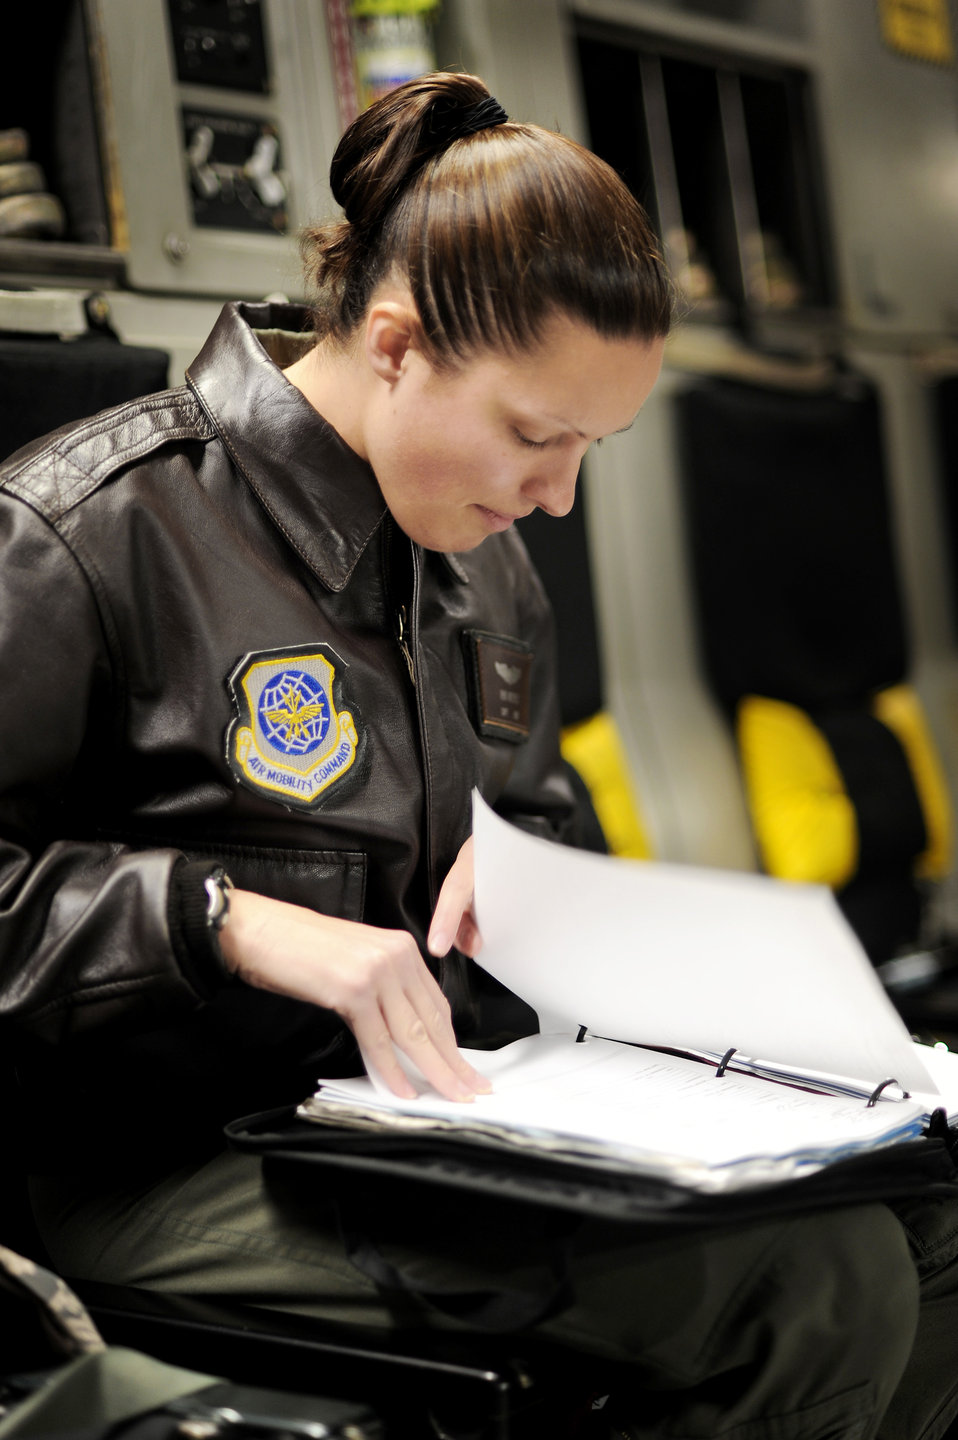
Charleston crew flies evaluation mission

Capt. Erika Meyers reviews technical orders during pre-flight checks before takeoff aboard a C-17 Globemaster III at Joint Base Charleston, S.C., Feb. 4, 2010. The flight was part of a routine training mission. Captain Meyers is a pilot with the 17th Airlift Squadron.